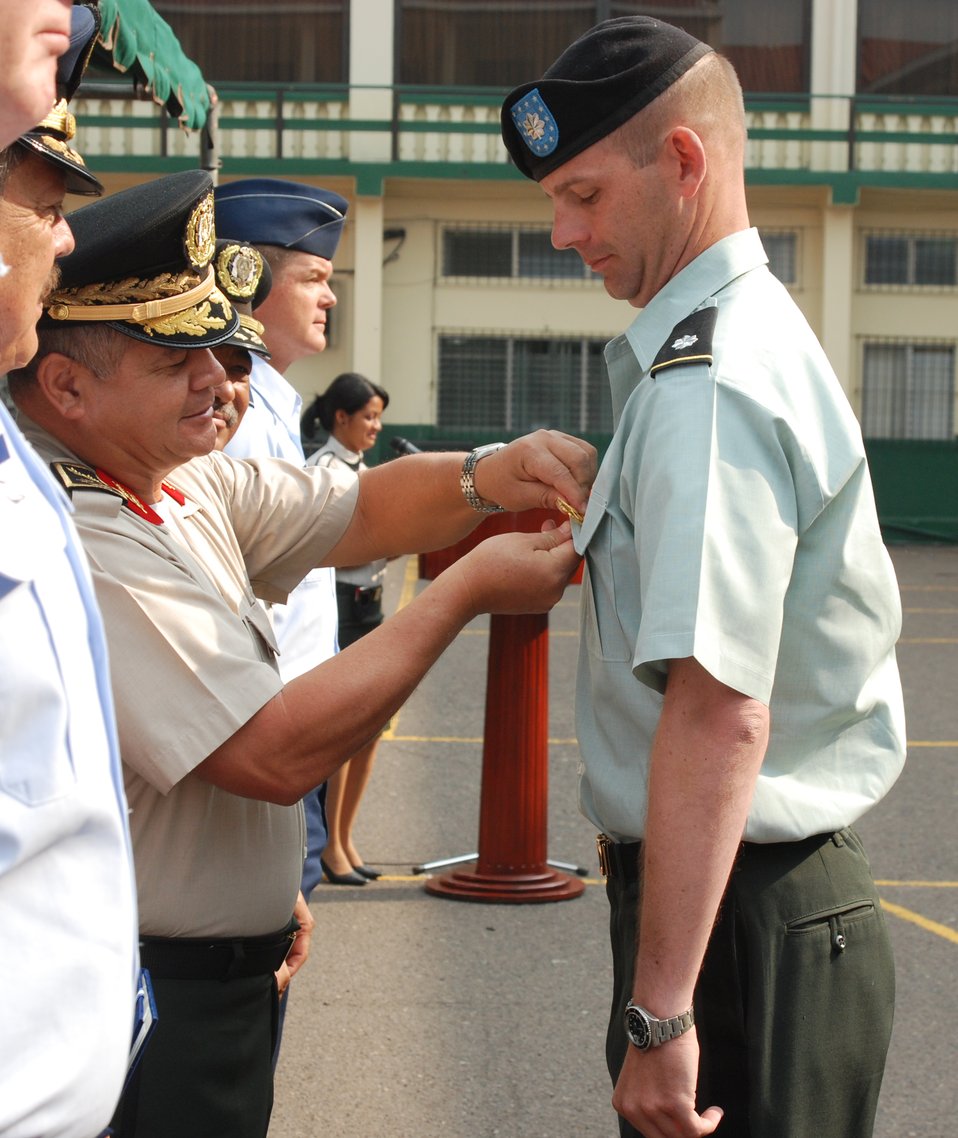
JTF-Bravo troops presented Honduran medals of merit

Army Lt. Col. Gregory Jicha receives the Honduran Medal of Merit First Class from Honduran Chief of Defense, General de Division Romeo Orlando Vasquez Velasquez, during a ceremony May 5 in Tegucigalpa Honduras. Colonel Jicha is the Joint Task Force-Bravo Army Forces commander at Soto Cano Air Base, Honduras.